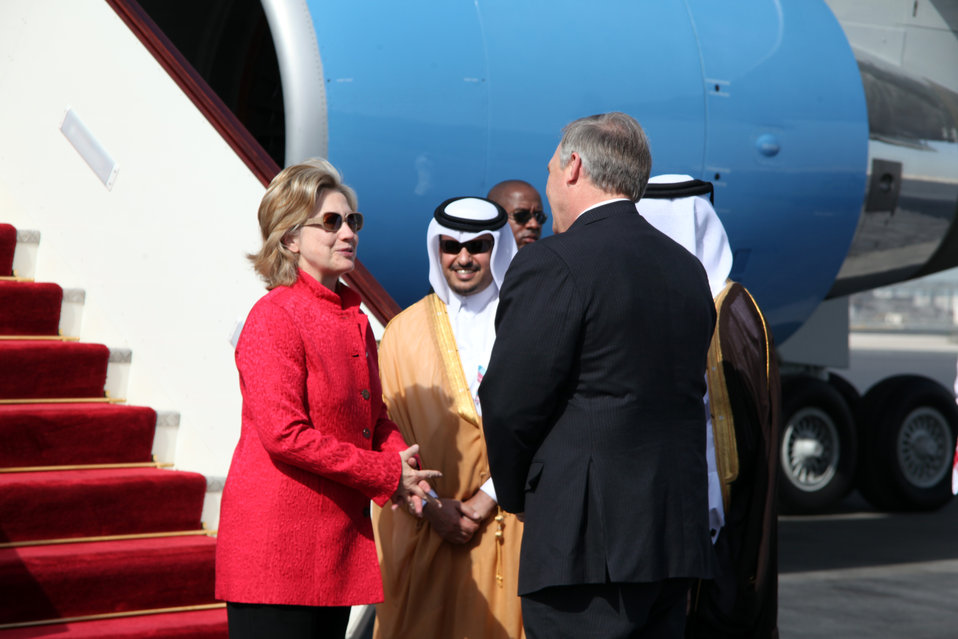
Secretary Clinton Travels to Qatar and Saudi Arabia

U.S. Secretary of State Hillary Rodham Clinton greets US Ambassador to Qatar Joseph Lebaron (middle), Ambassador Mohammed bin Khater Al-Khater Director of the Department of Protocol in Qatar (left), as well as Ambassador Ali Al-Hajri, Qatar Ambassador to the United States (right) in Doha, Qatar February 14, 2010.